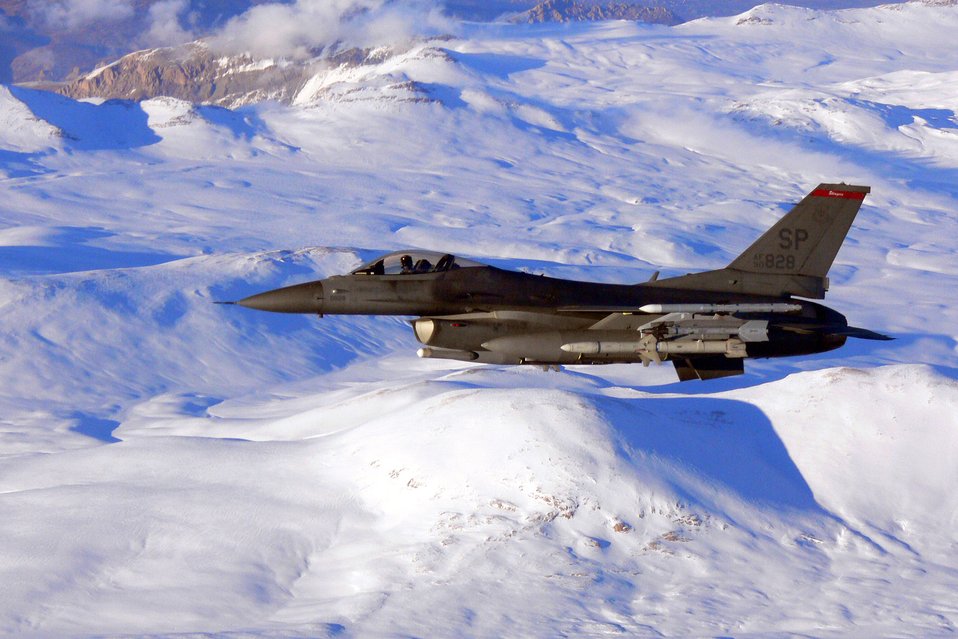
U.S., Turkish forces team up in Anatolian Eagle

An F-16 Fighting Falcon performs combat air patrol over the glaciers of central Turkey during Exercise Anatolian Eagle. About a dozen F-16s and more than 200 Airmen traveled from Spangdahlem Air Base, Germany, to participate in the NATO exercise at Konya Air Base, Turkey.